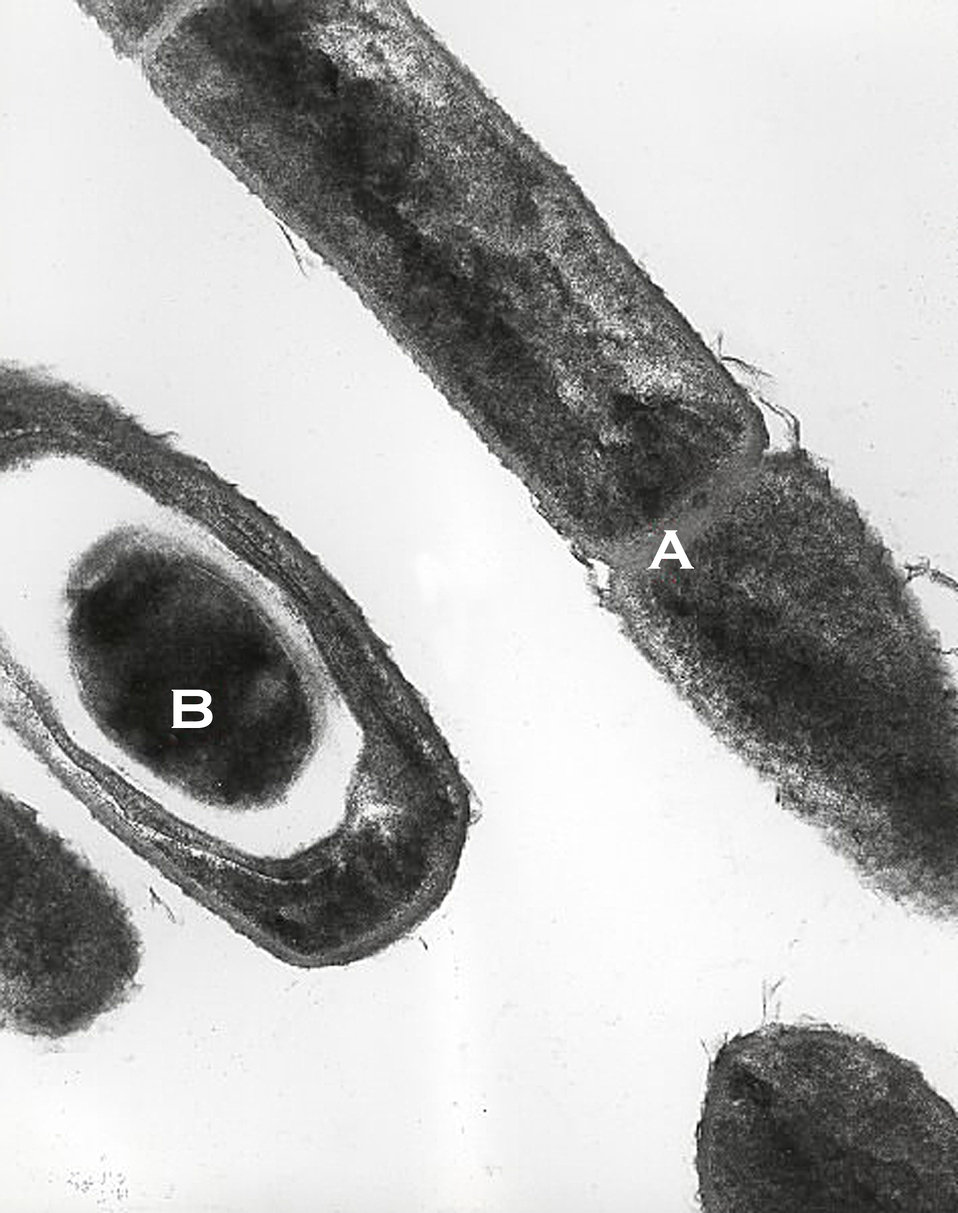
Transmission electron micrograph of Bacillus anthracis.